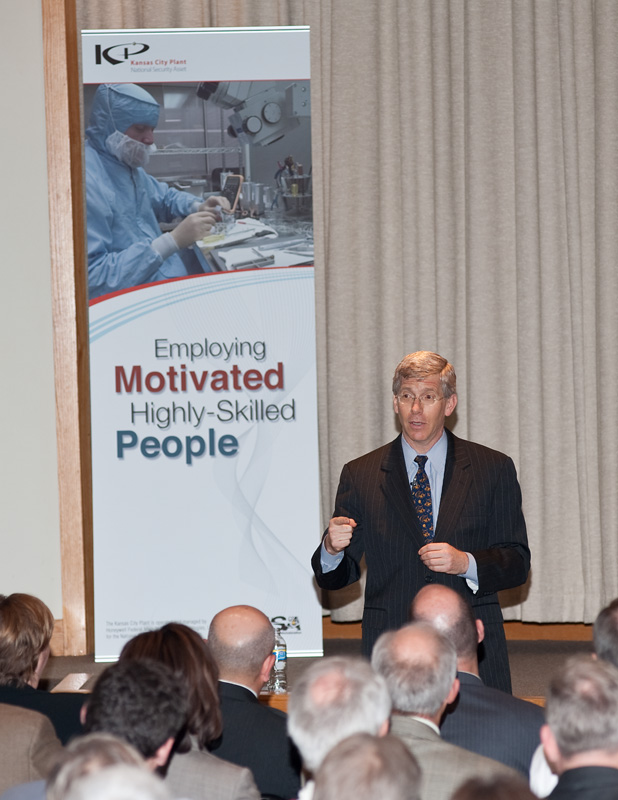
Deputy Secretary Daniel Poneman addresses KCP employees.